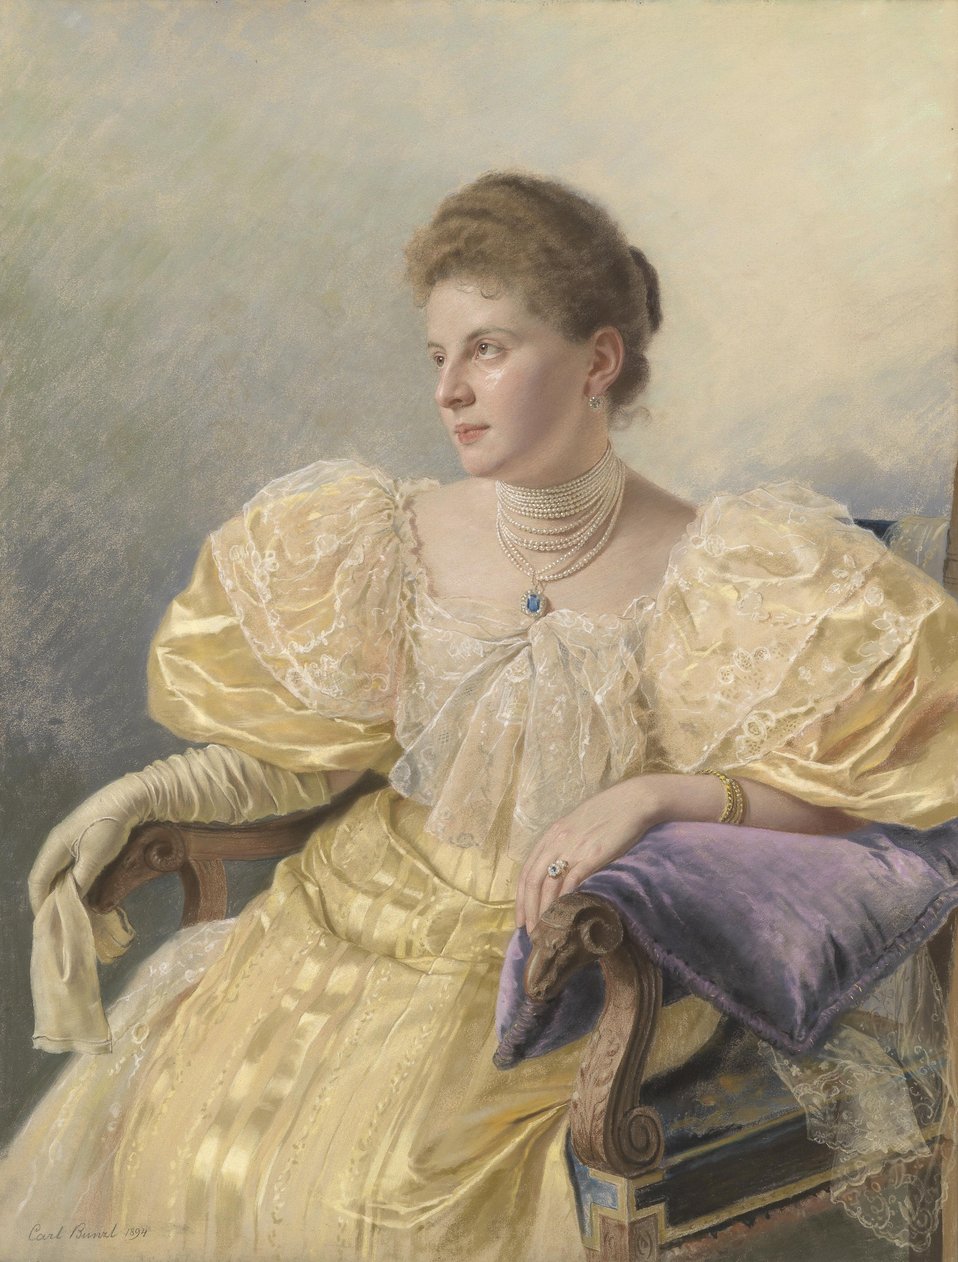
Carl Bunzl Porträt einer eleganten Dame in gelbem Kleid 1894